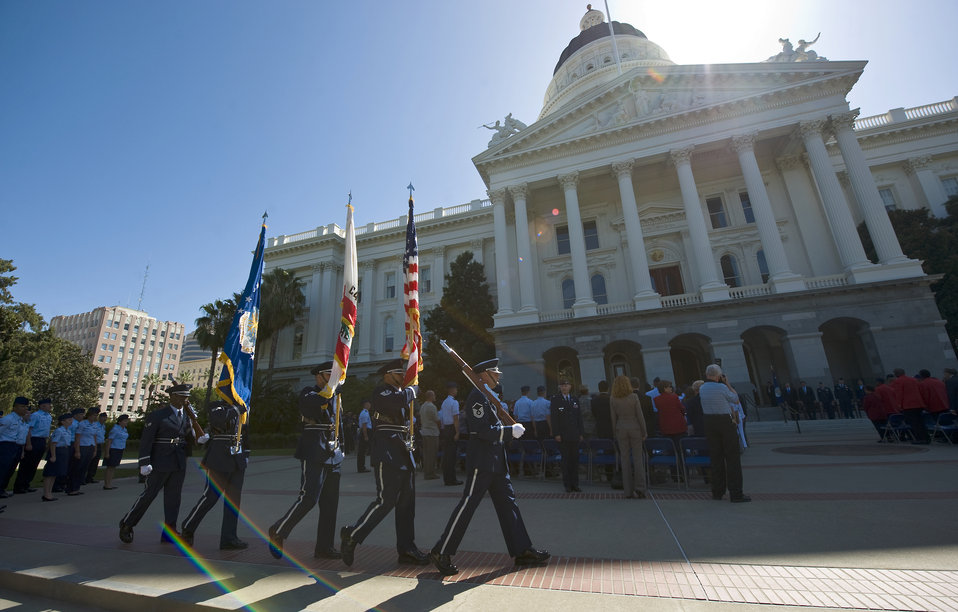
Air Force Week-Sacramento

Members of the U.S. Air Force Honor Guard post the colors before a proclamation ceremony Sept. 8, 2009, at the California State Capitol building's west steps naming Sept. 8 through 13 Air Force Week-Sacramento. Those in attendance included the Secretary of the Air Force Michael Donley; Gen. Arthur Lichte, the commander of Air Mobility Command; California Lt. Gov. John Garamendi; and Brig. Gen. Mary J. Kight, assistant adjutant general of the California National Guard. Air Force Week-Sacramento is an event using various activities and exhibitions to educate the local community about the Air Force's capabilities and missions.